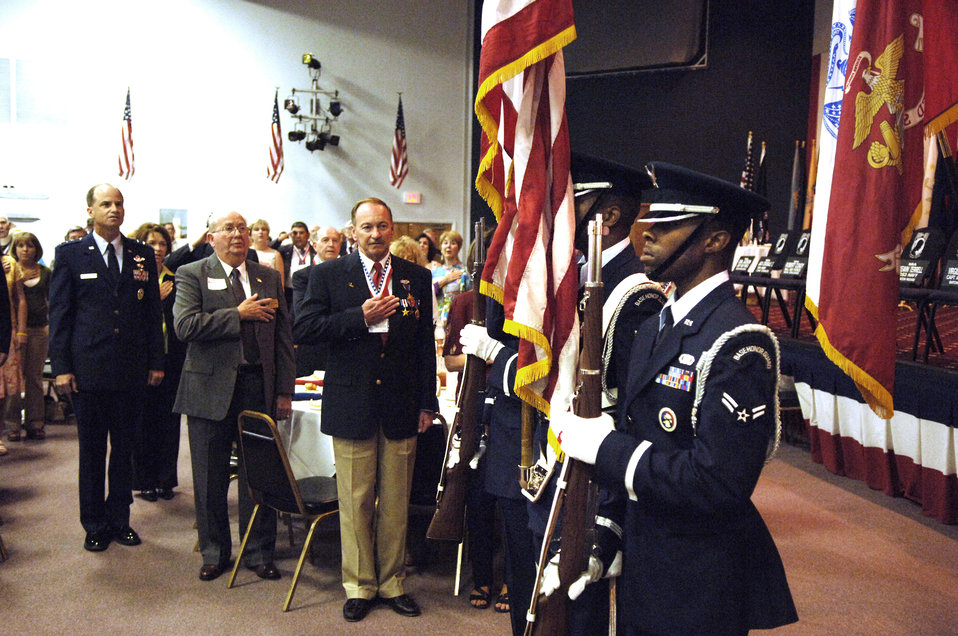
In their honor

The honor guard presents the colors at the 2006 Former POW/Purple Heart Luncheon at Barksdale Air Force Base, La., on Saturday, May 20, 2006. Eighty-two former prisoners of war and 250 Purple Heart recipients attended. The keynote speaker was Lt. Gen. Kevin P. Chilton (left), 8th Air Force commander.